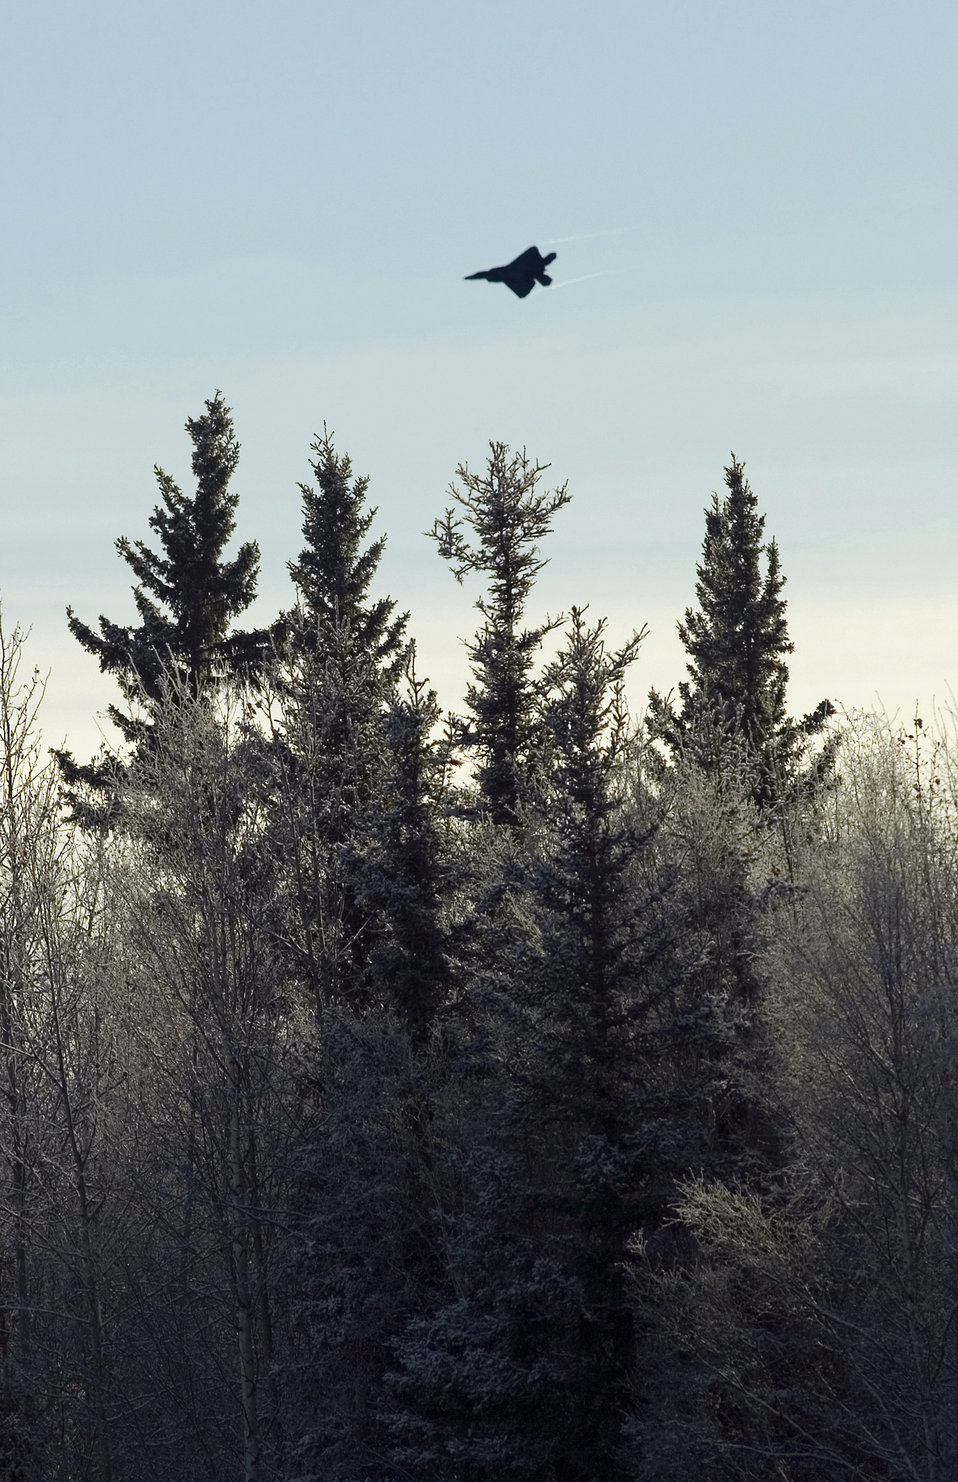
F-22 endures 3-week, cold-weather test at Eielson

An F-22 Raptor flies above Alaska as it arrives Nov. 5 to Eielson Air Force Base, Alaska. The F-22 underwent cold-weather testing on its braking system, with emphasis on its ability to maneuver, stop and go on slippery surfaces. The aircraft was tested by the 411th Flight Test Squadron during a three-week deployment on incrementally low-level runway condition reading surfaces, with temperatures ranging between 37 to -13 degrees. The F-22 is from Edwards AFB, Calif.